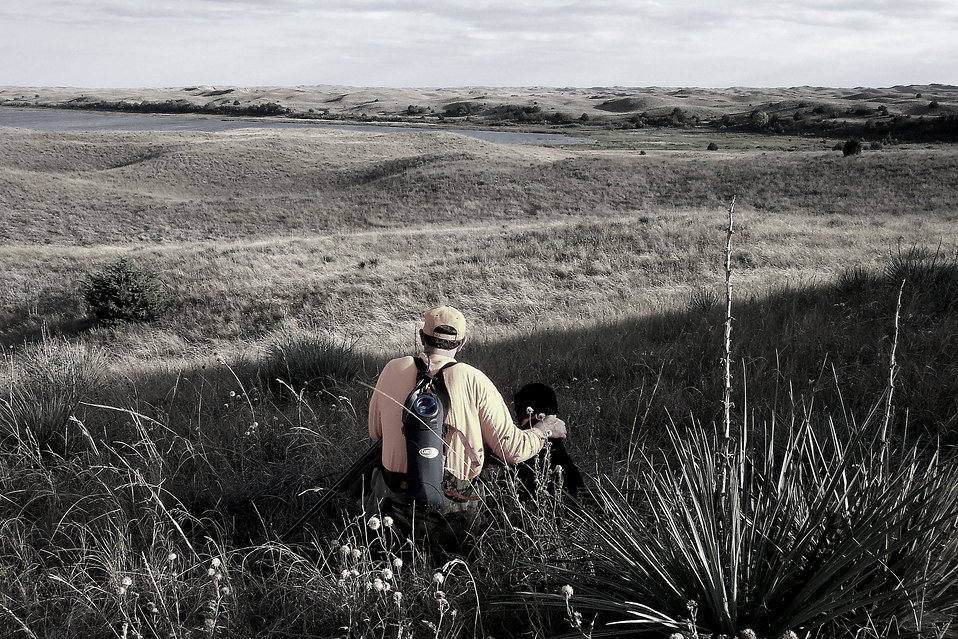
Upland Grouse Country

While enjoying a rest from an early autumn sharp-tailed grouse hunt, a hunter and his canine companion take in an appreciative view of the Nebraska Sandhills prairie landscape.

Photo taken at Valentine NWR.

Credit: Tony Ifland / USFWS

Photo Contest Entry #79